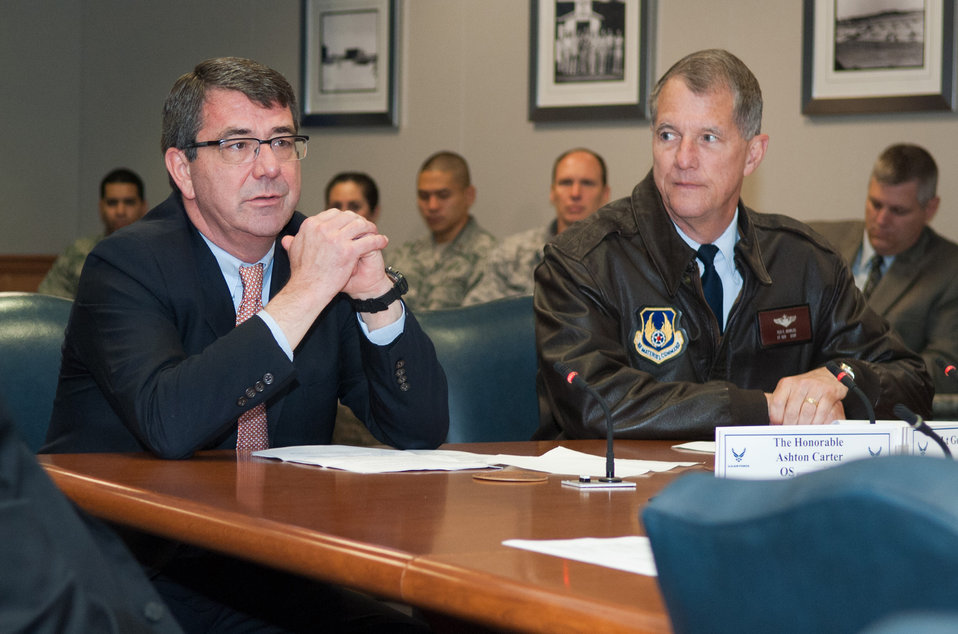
'Better buying power'

Dr. Ashton B. Carter, the undersecretary of defense for Acquisition, Technology and Logistics, speaks to Lt. Gen. Ted F. Bowlds and other senior leaders during a round table discussion May 25, 2011, at Hanscom Air Force Base, Mass. General Bowlds is the electronic systems center commander.